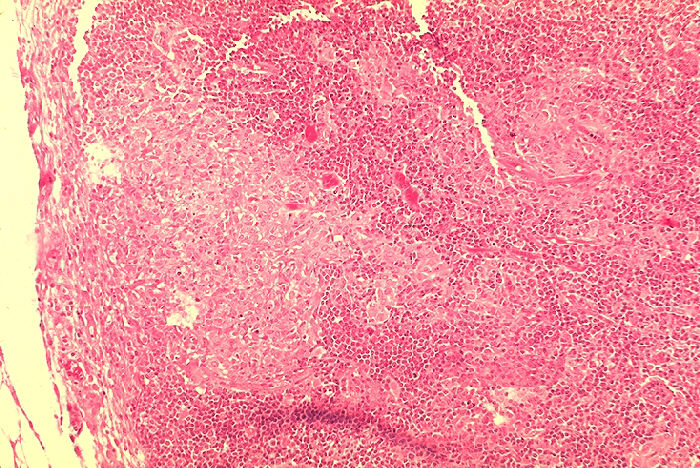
Histopathology of guinea pig lymph node in experimental Brucella suis infection.